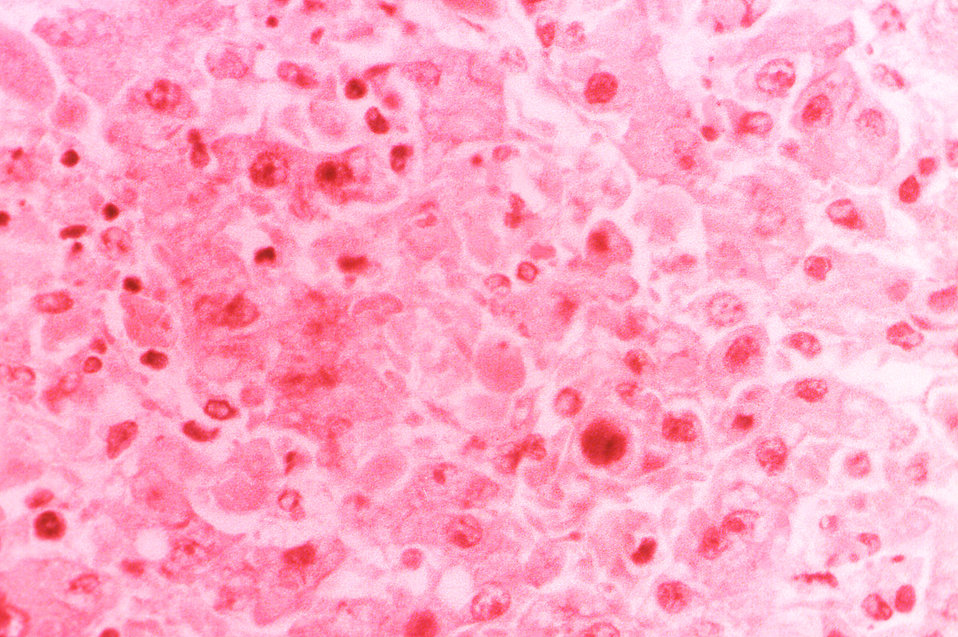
Under a magnification of 400X, this hematoxylin-eosin-stained (H&E) photomicrograph depicts the cytoarchitectural changes found in a liver tissue specimen extracted from a Lassa fever patient. In this view, one will note the presence of a 'typical Councilman body and pycnotic nuclei in an area of acidophilic necrosis, as well as microvacuolar fatty changes.'.